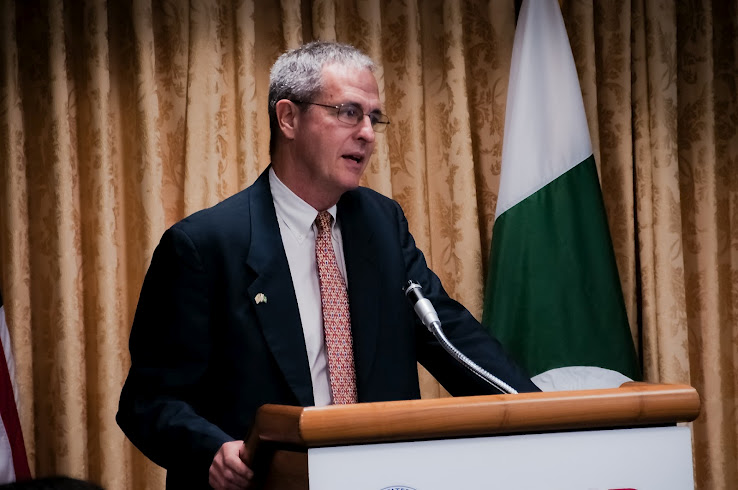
Jonathan Conly

WASHINGTON, D.C. – This week, Jonathan Conly was sworn in as the new U.S. Agency for International Development (USAID) Country Director for Pakistan. USAID Administrator Dr. Rajiv Shah presided over the ceremony and administered the oath in the presence of Mr. Conly’s family, friends, and colleagues, as well as members of the Pakistani-American community and the Pakistan Embassy’s Deputy Chief of Mission, Dr. Asad Majeed Khan.